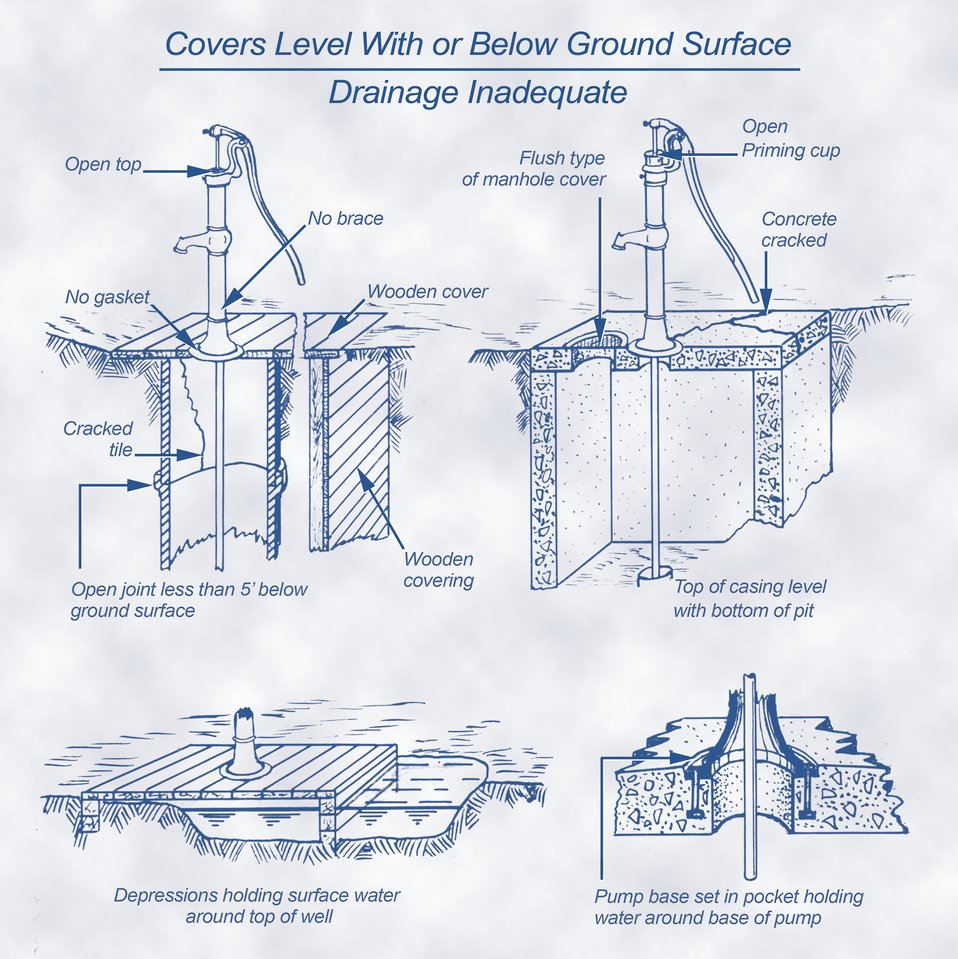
This historic 1928 diagram, which had been digitally enhanced and colorized, depicted examples of common pump and well defects, which included covers level with, or below ground surface, inadequate drainage around the top of the pump or well, cracked tiles or concrete located around the casing, and a casing top that was level with the bottom of the pit, thereby, preventing runoff drainage away from the water supply.